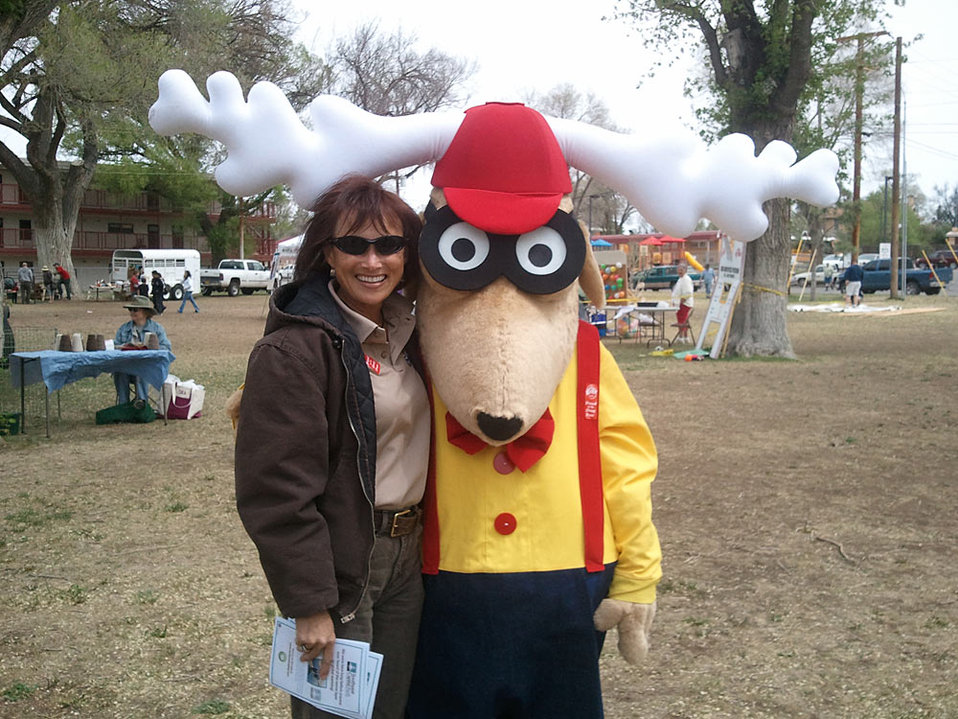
Debbie Pike--Southwest Region

Army veteran Debbie Pike now works as the Visitors Services Manager at the Northern New Mexico National Wildlife Refuge Complex in Las Vegas, New Mexico. (Her friend in the photo is from the local Elks chapter.)